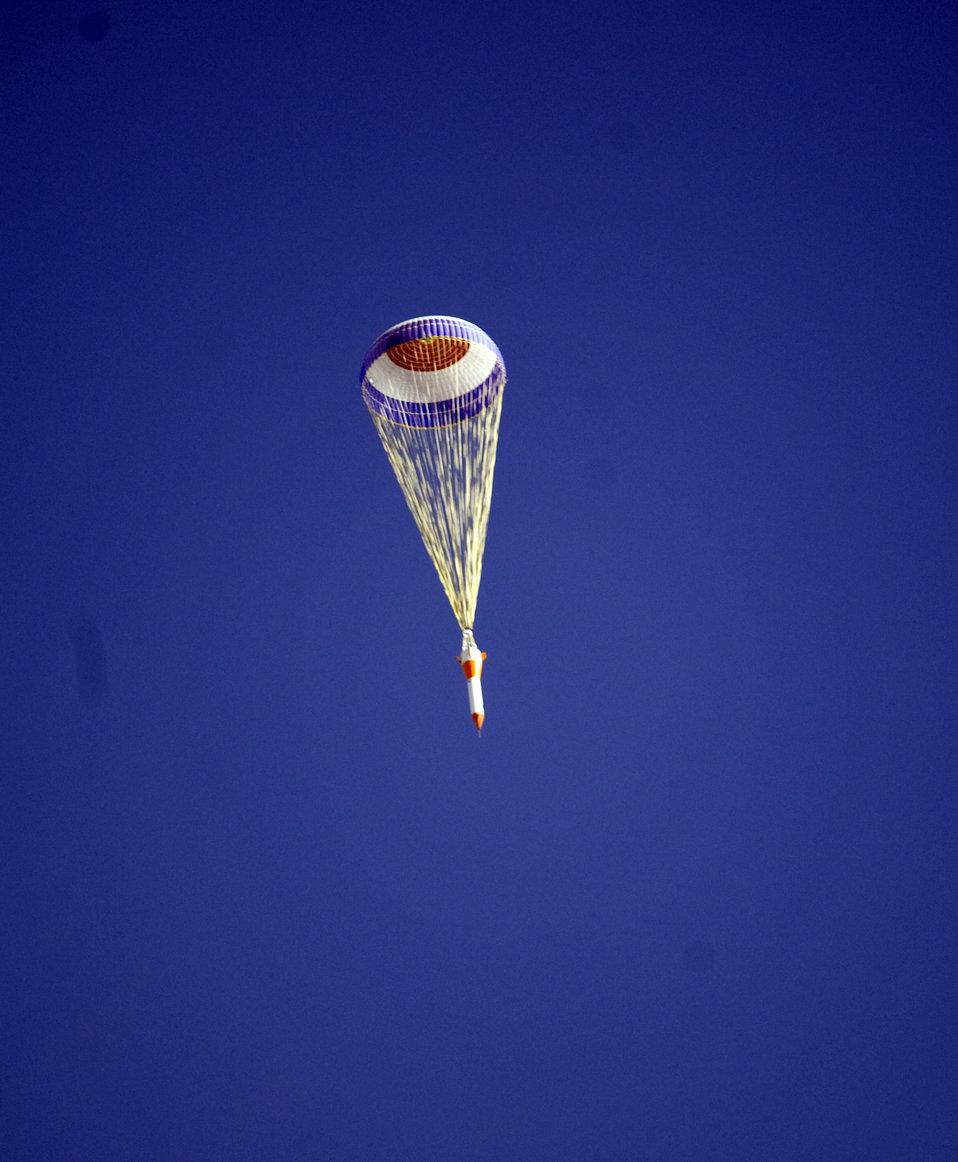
Aircrew breaks C-17 record with heaviest airdrop

A 77,000 pound jumbo drop test vehicle descends from 25,000 feet April 14, 2010, over Yuma Proving Ground, Ariz.